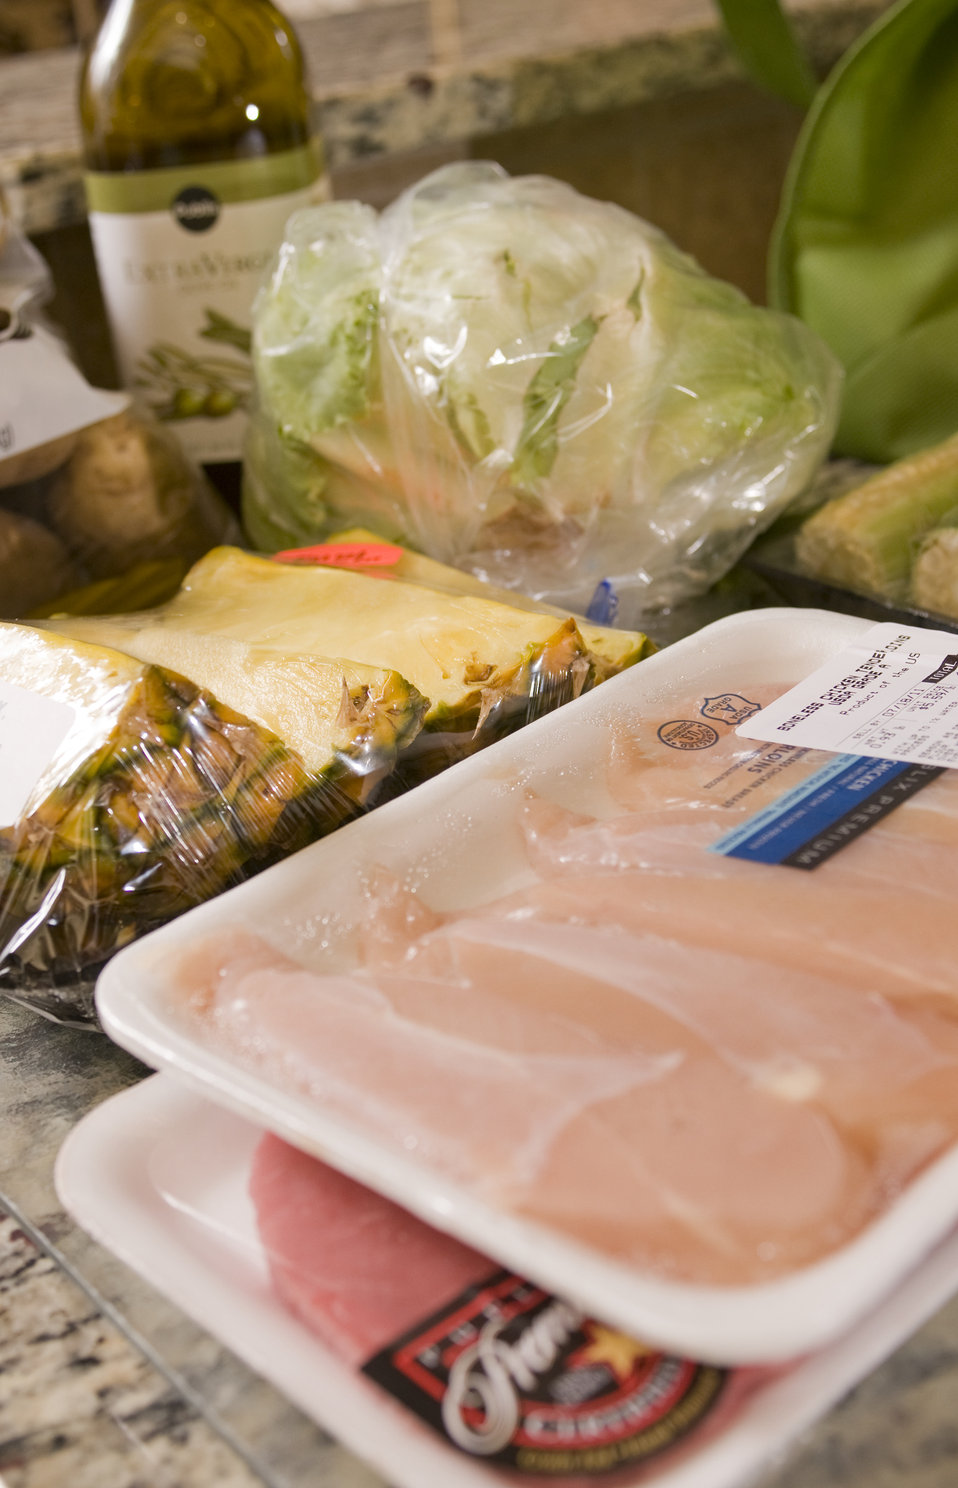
The countertop in this kitchen's sink area, had just been topped with some newly-purchased groceries including deboned chicken breast filets, pork cutlets, fresh-sliced pineapple, iceberg lettuce, baking potatoes, and ears of yellow corn.